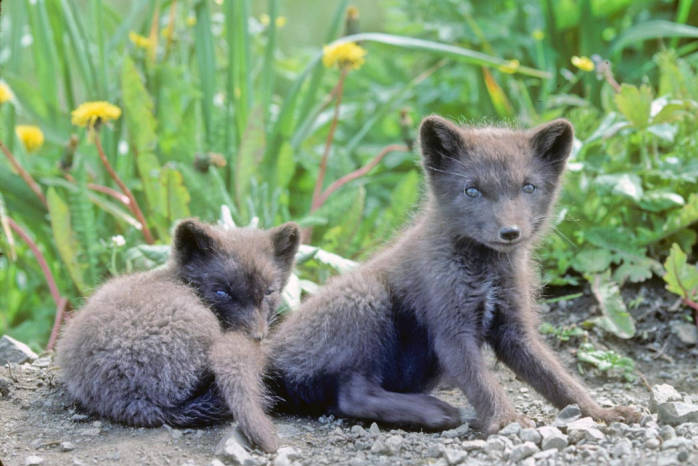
Arctic fox pups

Alaska Maritime National Wildlife Refuge